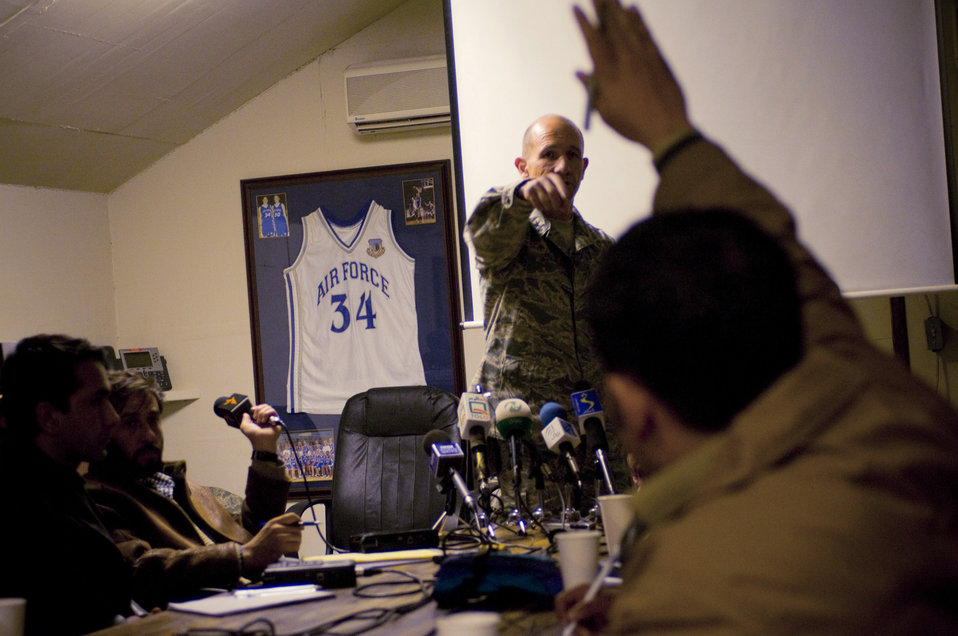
Afghan media learn about close-air support

Brig. Gen. James M.